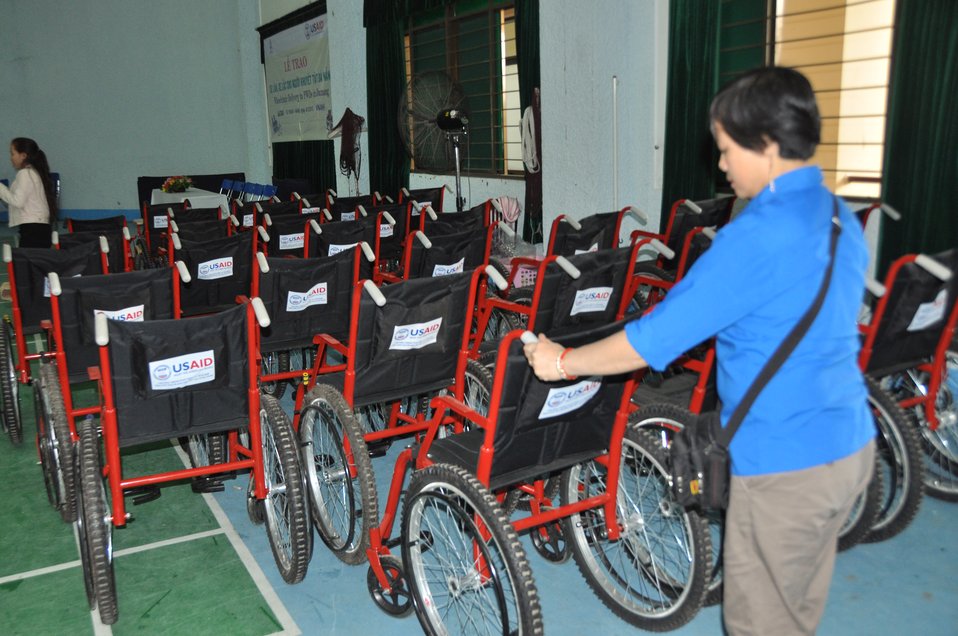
USAID supports delivery of wheelchairs to people with disabilities in Danang.

Danang, December 3, 2013.